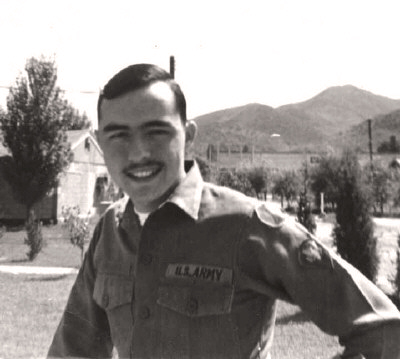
Joe Stanley, Training Technician for the Conservation Land Management Branch at NCTC, served in the Army from 1967 to 1970.He served in Korea, Fort Dix in New Jersey and Fort Meade, Maryland. He served in the North Carolina Army National Guard in 1971 to 1972 and the Delaware Army National Guard from 1972 to 1991. He attained a rank of Sergeant First Class (E-7).